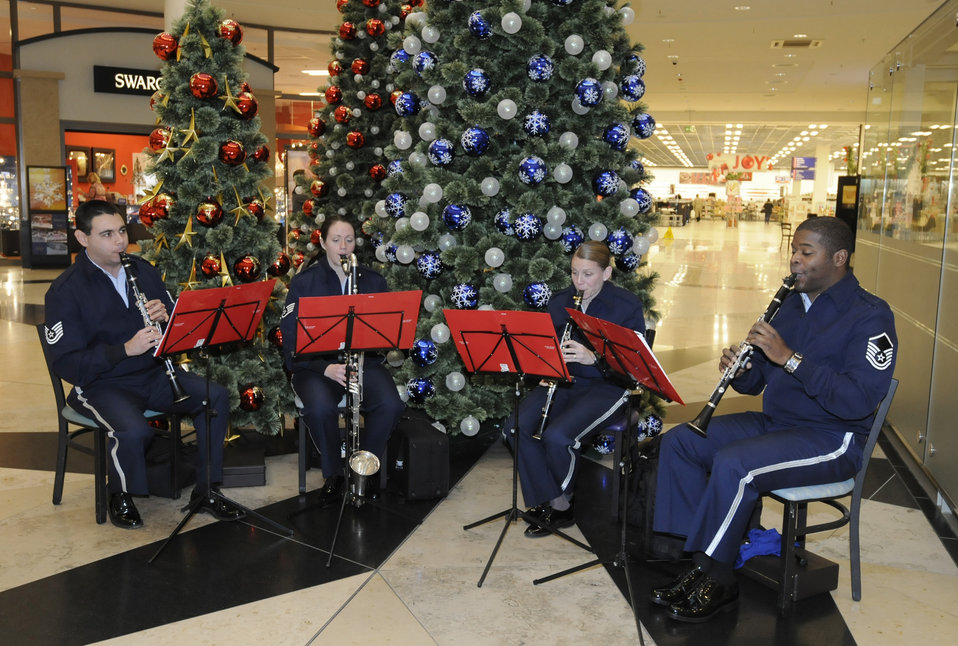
It's a Blue Christmas

The U.S. Air Forces in Europe Band plays holiday music for customers Dec. 20, 2010, in the Exchange at Ramstein Air Base, Germany. The band will be playing at multiple locations on base during the holiday season.